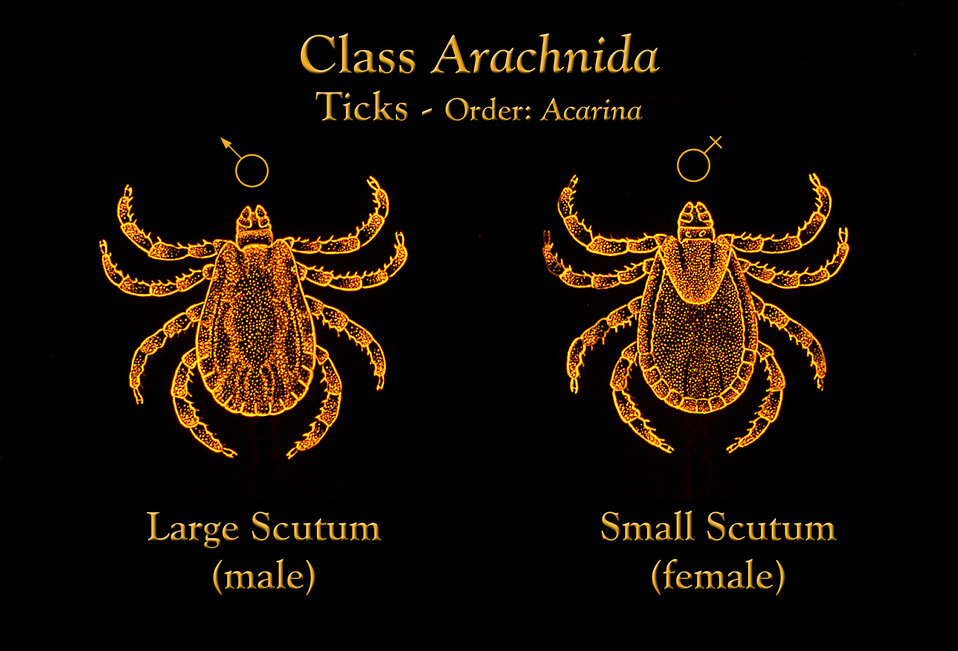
This drawing depicts the morphologic differences seen in the scutum of a male hard tick, Ixodidae with that of a female.